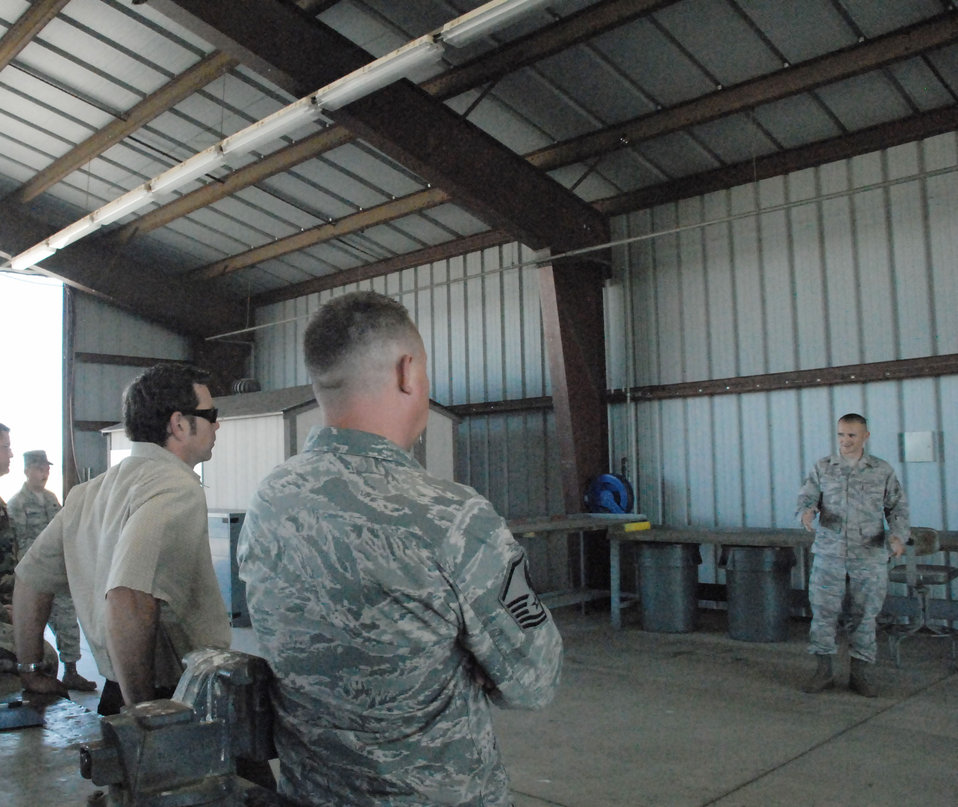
Beale officials use AFSO 21 to improve munitions training process

Staff Sgt. Nathan Scruggs explains how the members of the 9th Munitions Squadron handle munitons for training classes June 23 at Beale Air Force Base, Calif. The squadron took part in a value stream mapping event to improve the process they use for their Combat Ammuntion Planning and Production courses.